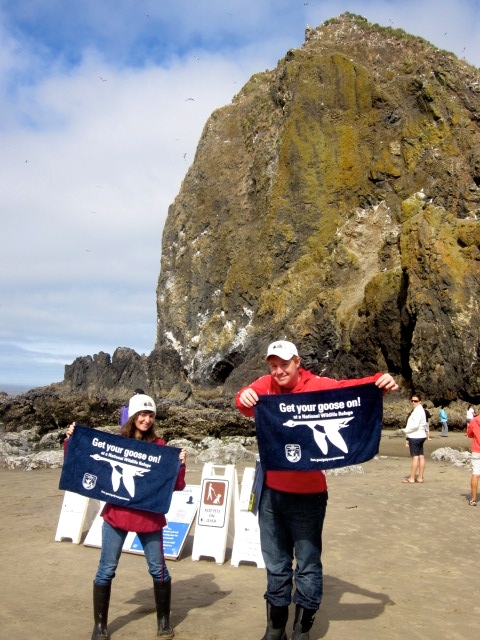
Get Your Goose On!

Haystack Rock Awareness Program Staff Interpreters Sam Irvine and Sam Ferber get their goose on at Haystack Rock during Late Summer Low Tide Madness!